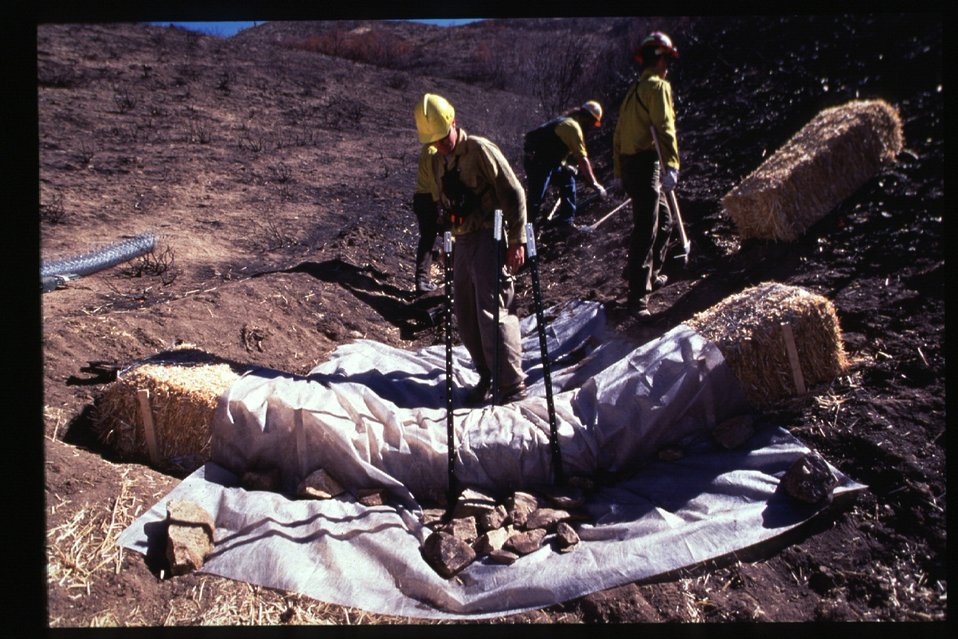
8th Street Fire Hay bales Four Rivers Field Office LSRD Lower Snake River District